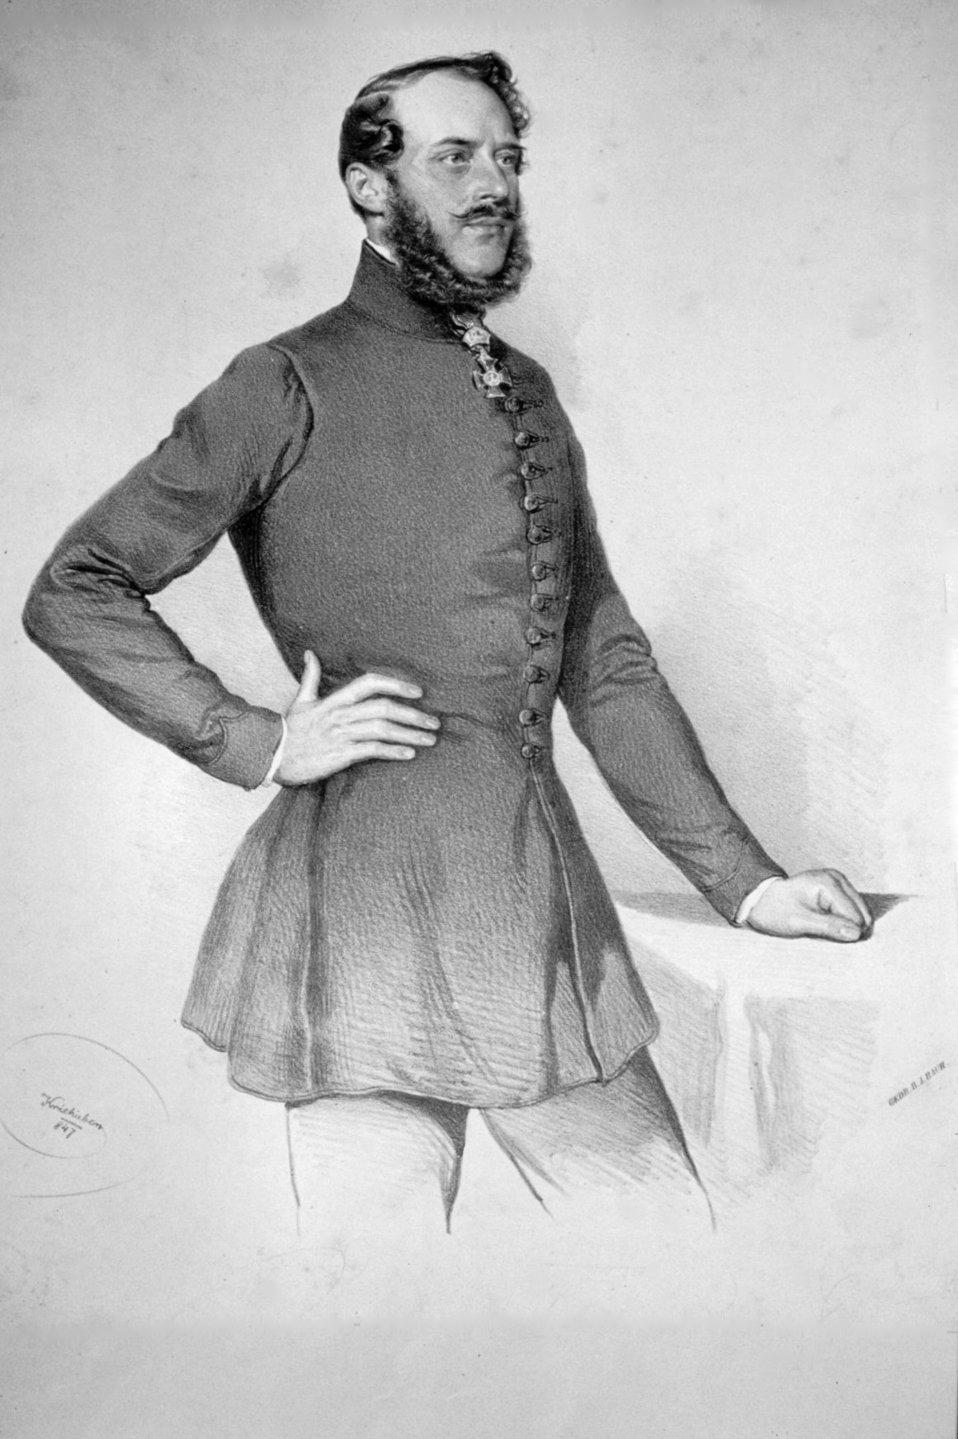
Abraham Vay Litho